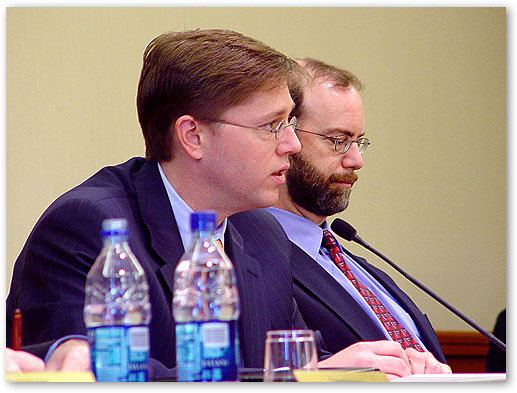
FCC Chairman Kevin Martin and Commissioner Jonathan Adelstein.